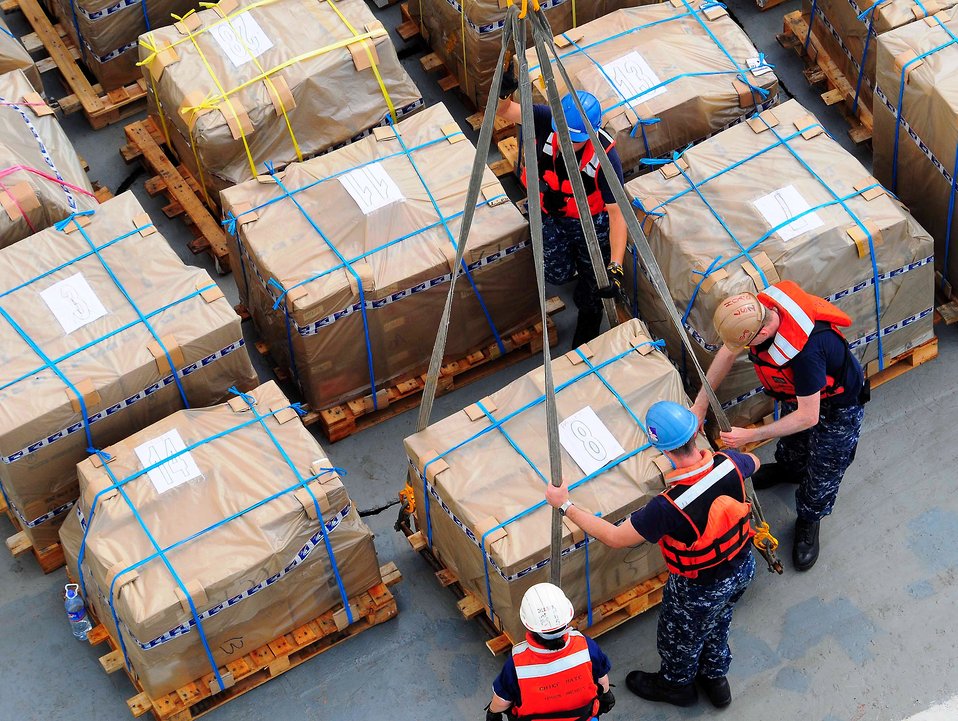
Sailors Secure a Pallet of Medical Supplies

Sailors assigned to the Military Sealift Command hospital ship USNS Mercy (T-AH 19) secure a pallet of medical supplies to a crane lift during a stores onload in support of Pacific Partnership 2010 on July 7, 2010. Mercy is en route to Indonesia during the fifth in a series of annual U.S. Pacific Fleet humanitarian and civic assistance endeavors to strengthen regional partnerships.